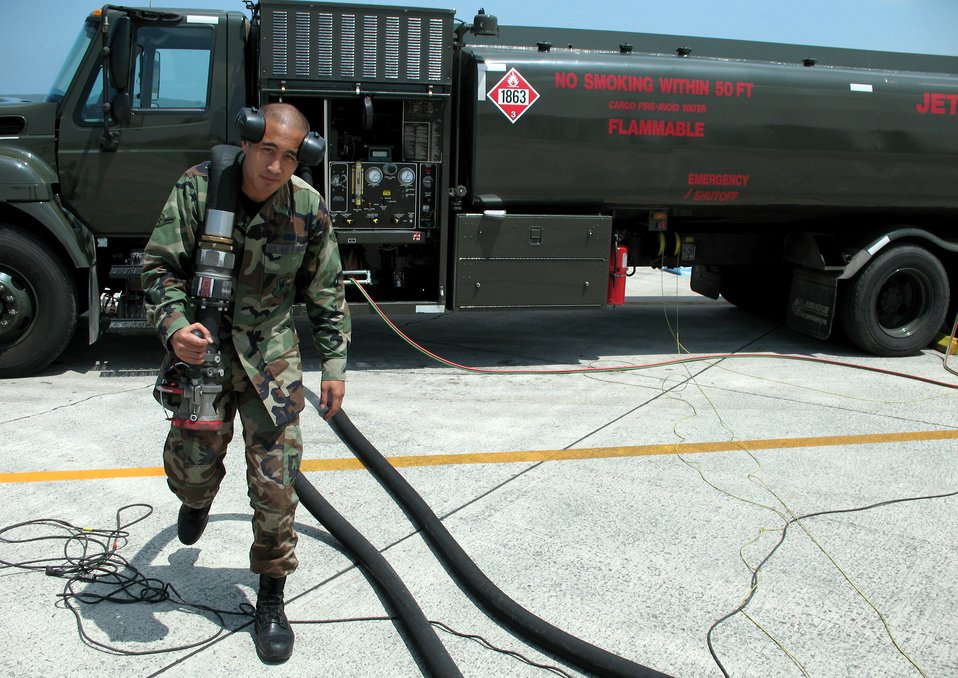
F-22s use refueling 'pit stop'

Amn Amery Caoili pulls the hose from the fuel truck to unwind it during hot pit operations at Kadena Air Base, Japan. Hot pits allow fighters to be refueled in a fraction of the time it would take if the aircraft had to be shut off and parked during a normal turn time. Airman Caoili is a fuels distribution operator with 18th Logistics Readiness Squadron.